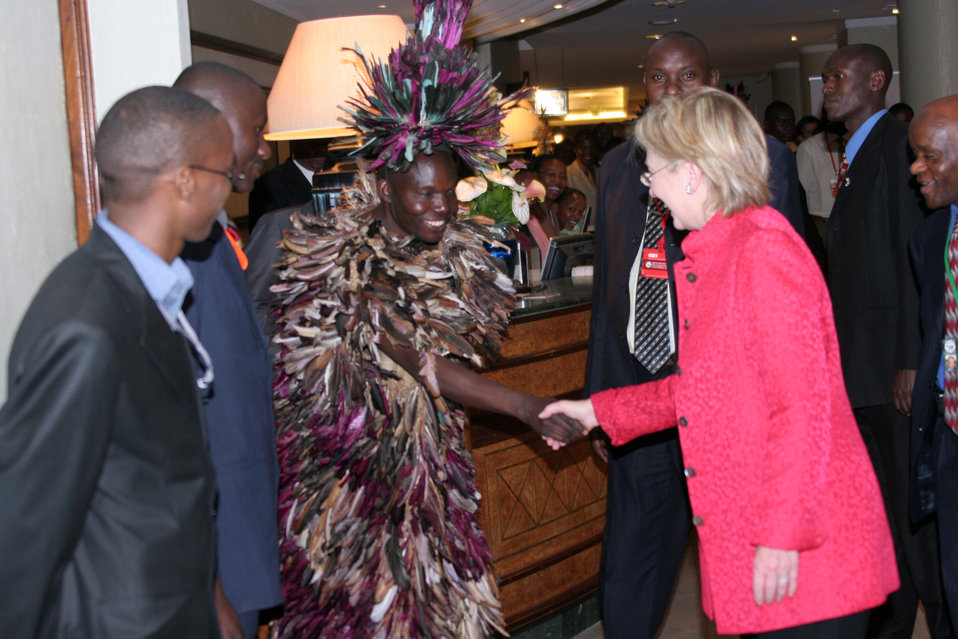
Secretary Clinton Arrives in Nairobi, Kenya

U.S. Secretary of State Hillary Rodham Clinton is greeted by a gentleman from African Heritage wearing a costume from Cameroon at the Hotel Intercontinental in Nairobi, Kenya August 4, 2009.